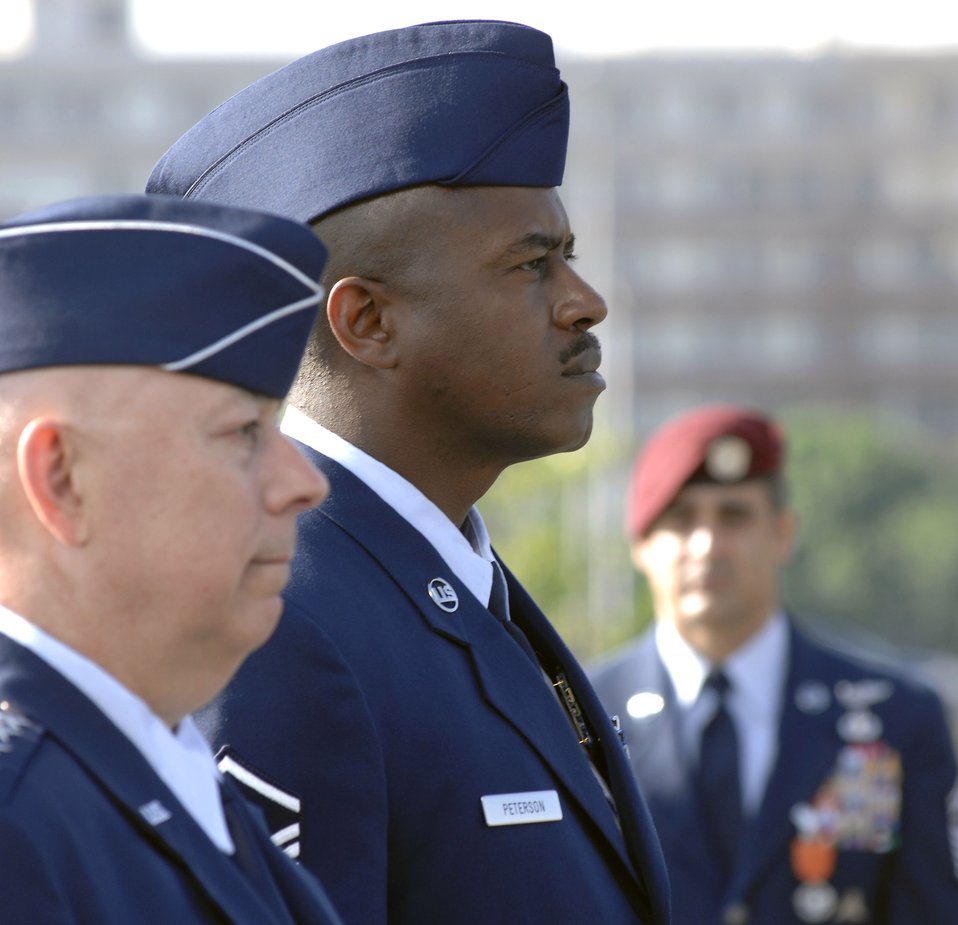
Air Force Combat Action Medal

Master Sgt. Charlie Peterson stands beside Air Force Chief of Staff Gen. T. Michael Moseley as the citation to accompany the award is read. The Air Force Combat Action Medal was presented June 12 to six Airmen. They were the first to receive the medal in a ceremony held at the Air Force Memorial in Arlington, Va.